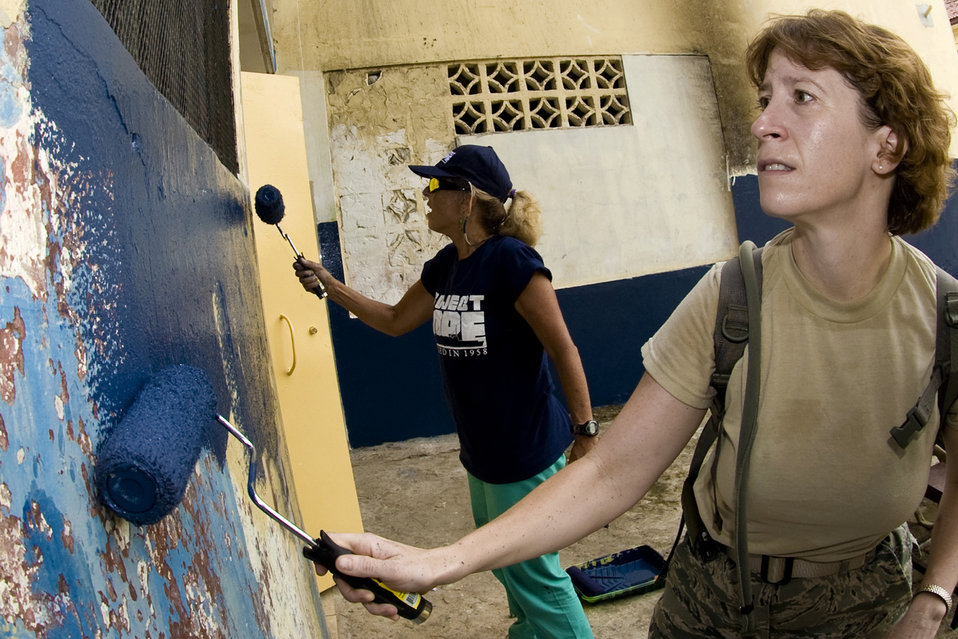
Continuing Promise 2009

Maj. Penny Spaid (right) and others repaint the Juan Antion Henriquez Escuela May 30 in Colon, Panama. Major Spaid is a registered nurse assigned to the 10th Medical Operation Squadron at the U.S. Air Force Academy in Colorado Springs, Colo. The USNS Comfort is currently supporting Continuing Promise 2009 on a four-month humanitarian mission to seven countries in Latin America and the Caribbean.